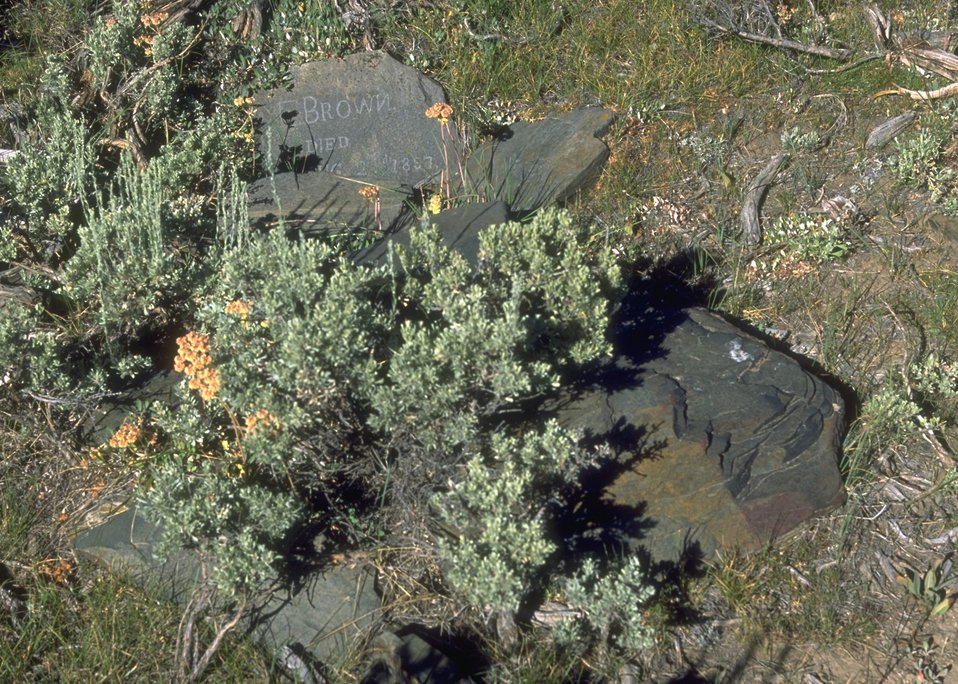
Grave site (1857) along the Oregon Trail, Lander Field Office.